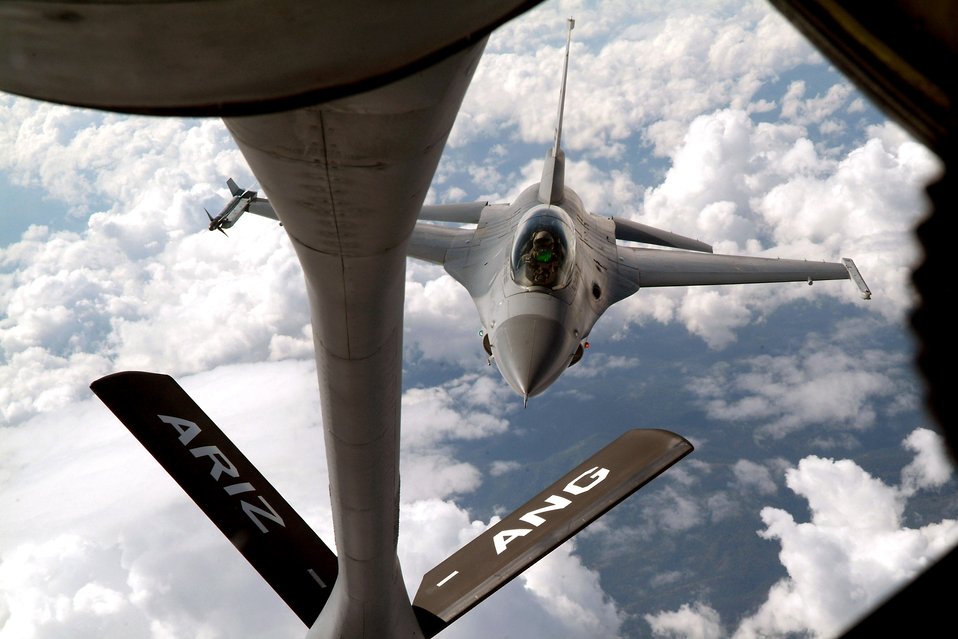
CAP cadets soar on incentive flight

An F-16 Fighting Falcon prepares to connect to the boom of a KC-135 Stratotanker during an incentive flight for students in the Civil Air Patrol and Aviation Careers Education Camp in Phoenix on Aug. 1. The camp was held in conjunction with the Tuskeegee Airmen Convention. Both aircraft are with the Arizona Air National Guard.